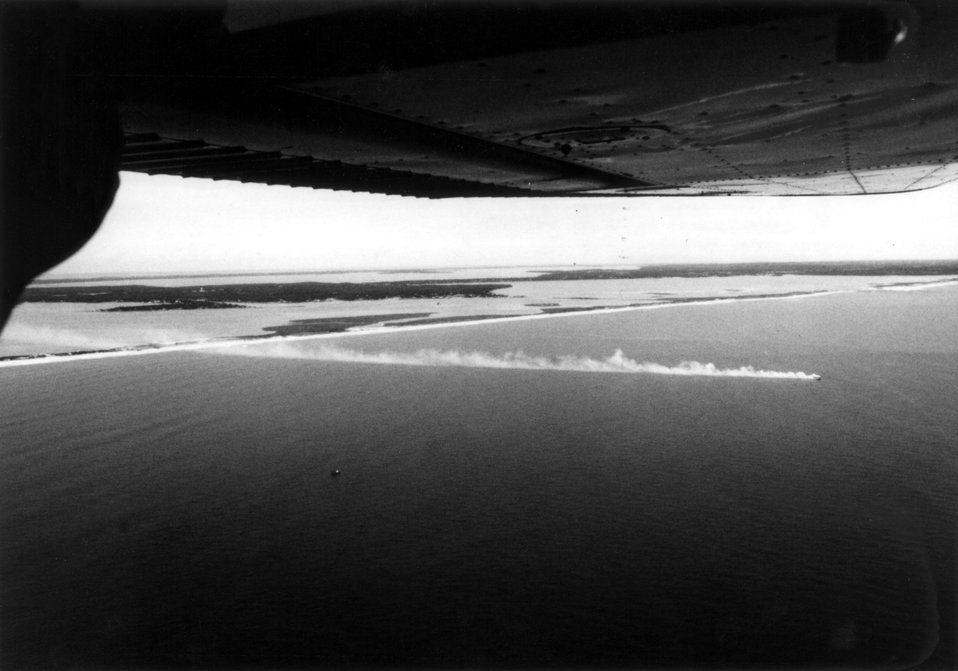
A smoke plume is released from a boat (center-right) anchored one mile off the New Jersey shore in one of a series of experiments being performed by the AEC's meteorology group in anticipation of siting nuclear power plants at offshore locations. Information on the atmospheric diffusion characteristics over water is essential to predict the environmental impact of the offshore nuclear power plants. c. 1974